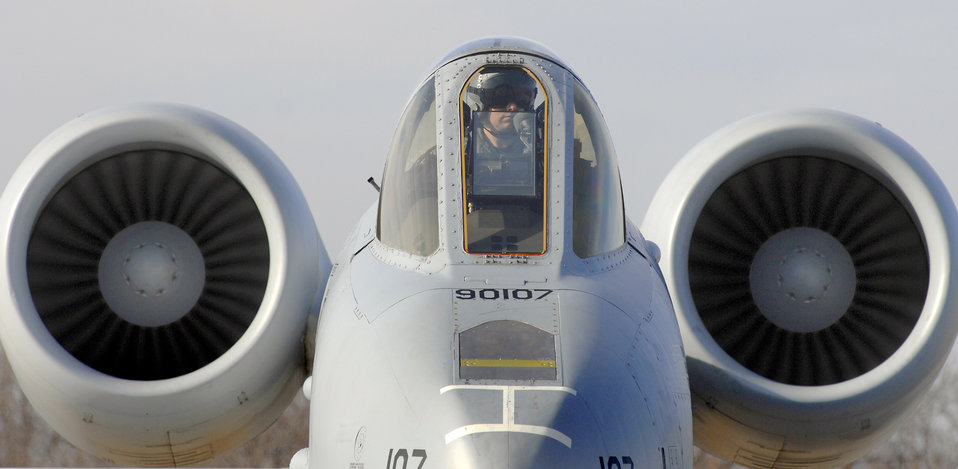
Hot pit refueling

A pilot with the 442nd Fighter Wing sits on the ramp in his A-10 Thunderbolt II while crew chiefs perform a hot pit refuel for his aircraft Dec. 8, 2010, at Whiteman Air Force Base, Mo. Hot pit refueling is a procedure usually performed in a combat situation to rapidly refuel aircraft while engines are running to thrust pilots back into the fight. The technicians with the 442nd FW are practicing this procedure to keep their skills sharp.